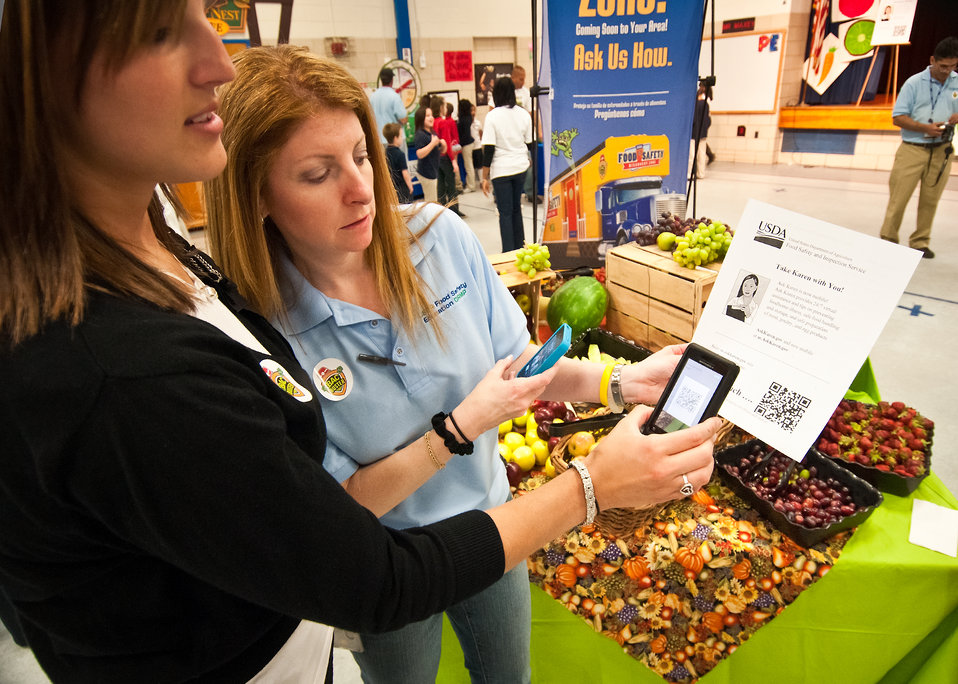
Lindsey Gormnus (left), a first grade teacher at Maryland City Elementary School in Laurel, MD and Donna Karlsons, United States Department of Agriculture Food Safety Inspection Service load “Ask Karen,” an online food safety question and answer service provided by the United States Department of Agriculture, Food Safety Inspection Service into Gormus’s mobile telephone during the Food Safety Inspection Service Food Safety Education Camp at Maryland City Elementary School, on Thursday, May 5, 2011. “Ask Karen” provides 24/7 virtual assistance and tips on preventing food borne illness, safe food handling, storage and safe preparation of meat, poultry and egg products. The 'Ask Karen' app was announced at the United States Department of Agriculture, Food Safety Inspection Service, Food Safety Education Camp held at Maryland City Elementary in Laurel, MD, on Thursday, May 5, 2011.